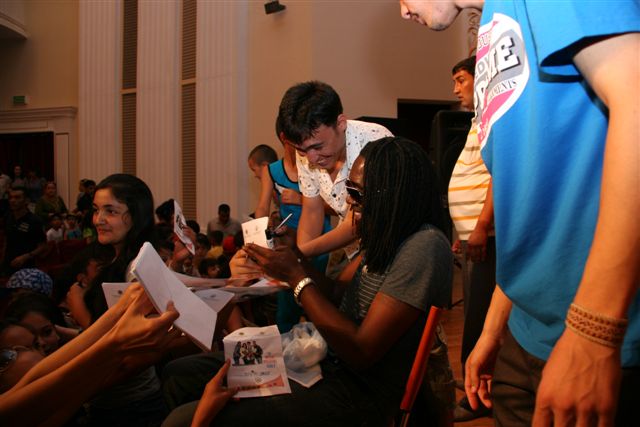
Melvin Williams Group Meets With Fans

The Melvin Williams Group meets with fans in Turkmenabat, Turkmenistan, on June 22, 2011. The Melvin Williams Group is visiting Turkmenistan from June 21-26, 2011, as part of the U.S. Embassy’s annual American Culture Days celebration.